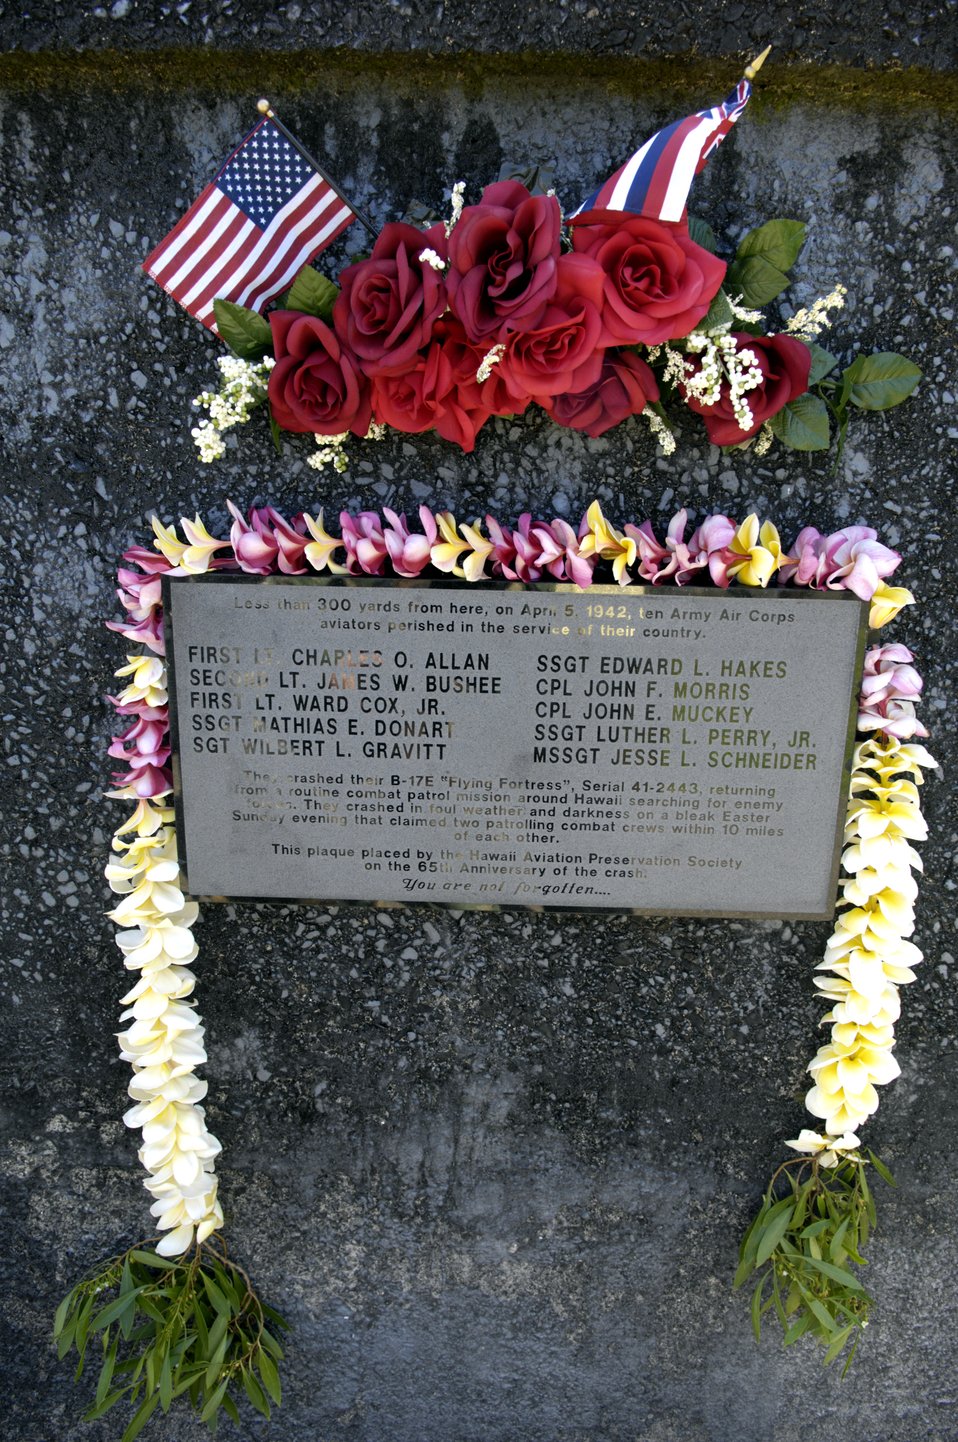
B-17 crew remembered

A plaque honoring 10 crew members of a B-17E Flying Fortress sits about 300 yards from the crash site on Nu'uanu Pali Lookout, Hawaii April 5, 2007. Airmen from Hickam Air Force Base and members of Hawaii Aviation Preservation Society held a memorial and dedicated the plaque airmen that crashed into the cliffs of Mt. Keahiakahoe 65 years ago.